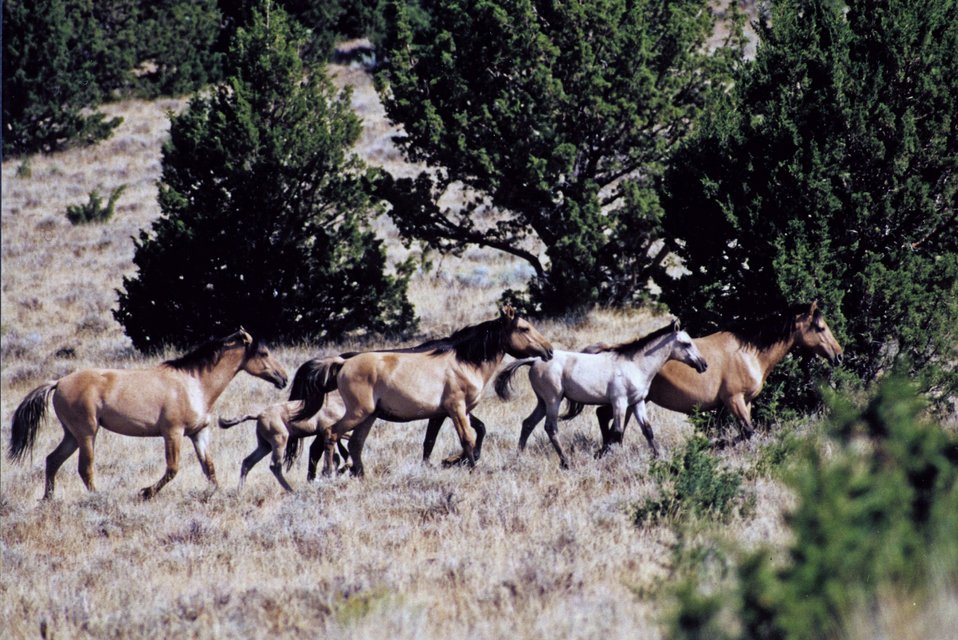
Riddle Wild Horse Management Heard Area.